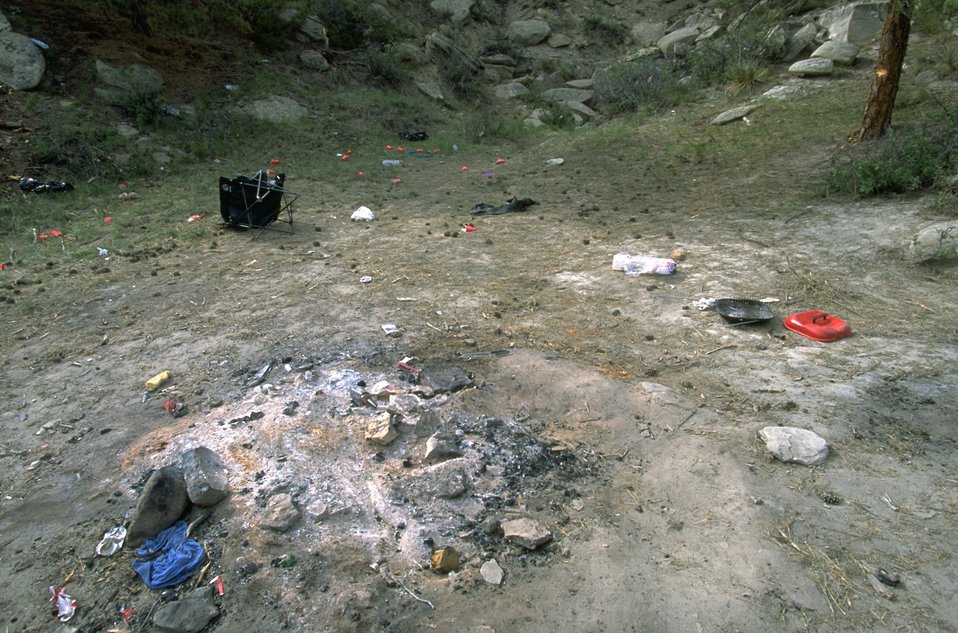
Results of a ""kegger"" in the Acton Recreation Area - trash thrown around and a campfire that had been left burning after everyone had left the site